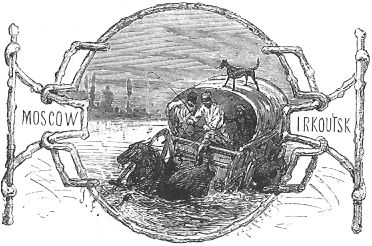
An illustration from the novel 'Michael Strogoff: The Courier of the Czar' by Jules Verne drawn by Jules Férat. Polski: Ilustracja powieści Juliusza Verne'a 'Michał Strogow, kurier carski' autorstwa Julesa Férata. Français : 'Michel Strogoff. Le courier du tzar', Jules Férat.